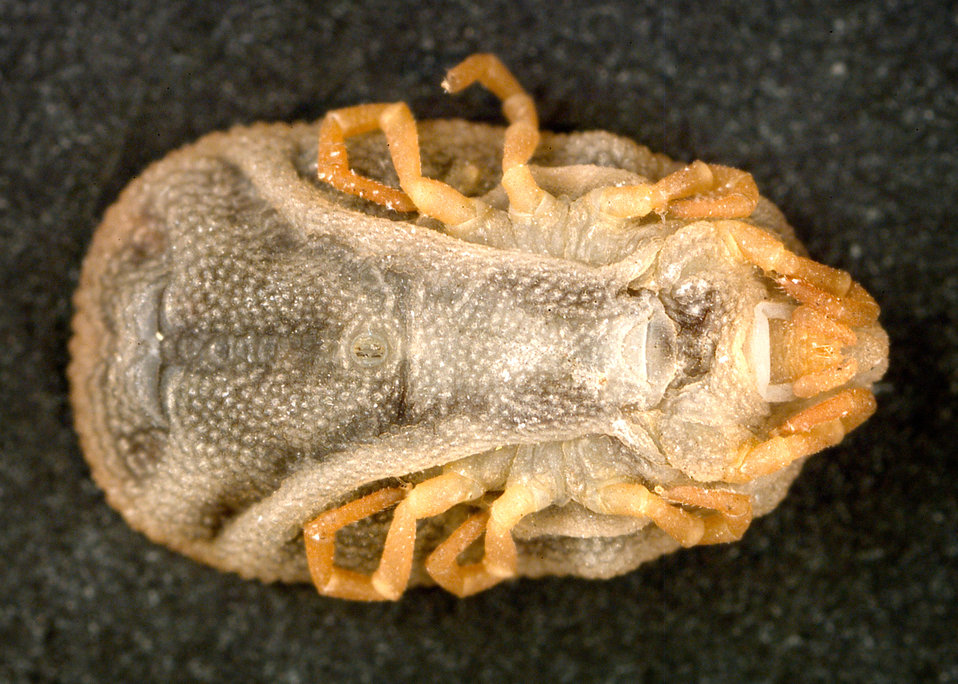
This 'soft tick' Carios kelleyi, formerly Ornithodoros kelleyi, is associated with bats, which act as its host.